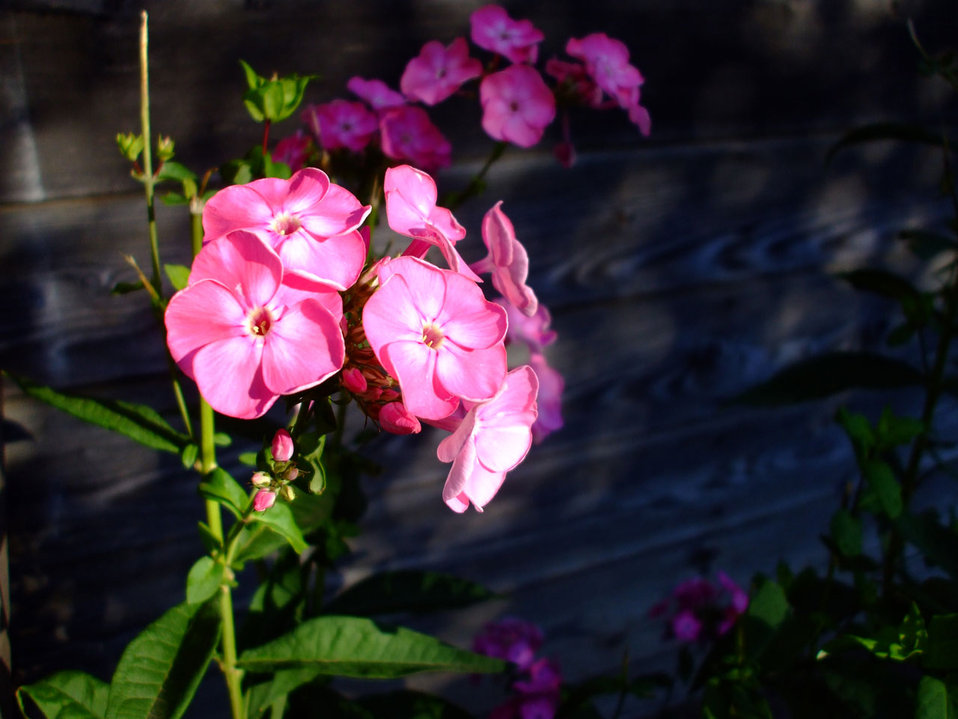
Pink burst

Pink flower burst.